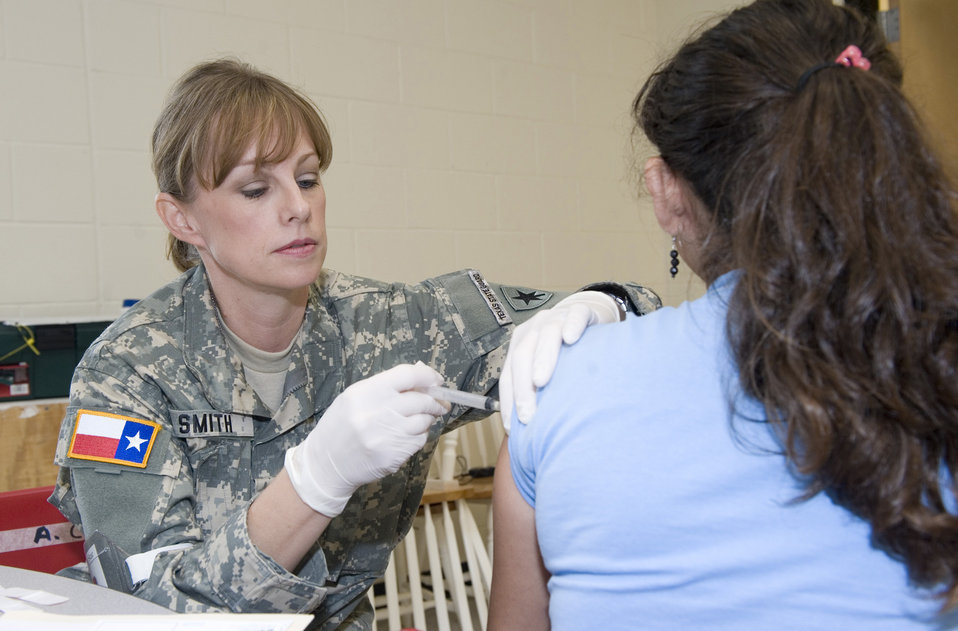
Operation Lone Star

Capt. Jodie Smith, a member of the Texas State Guard, inoculates a young student July 29 at Dr. Javier Saenz Middle School in Penitas, Texas. The young girl is receiving her school required immunizations, shots she otherwise might not receive without Operation Lone Star.